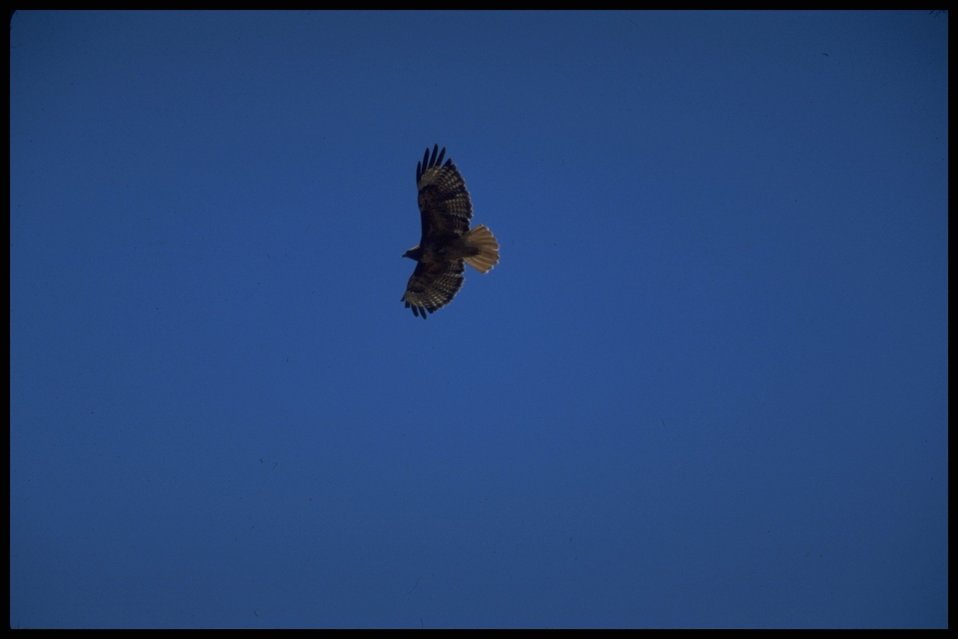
Far shot of Red Tail Hawk in flight, Lakeview District.